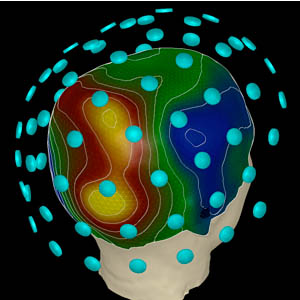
At Los Alamos National Laboratory, Magnetoencephalography (MEG) measures that magnetic field surround the head as the brain responds to viewing a grating pattern.
Scientists developed a software package known as MEGAN designed to conduct MEG analysis and visualization that in turn will help researchers better understand brain structure and function.